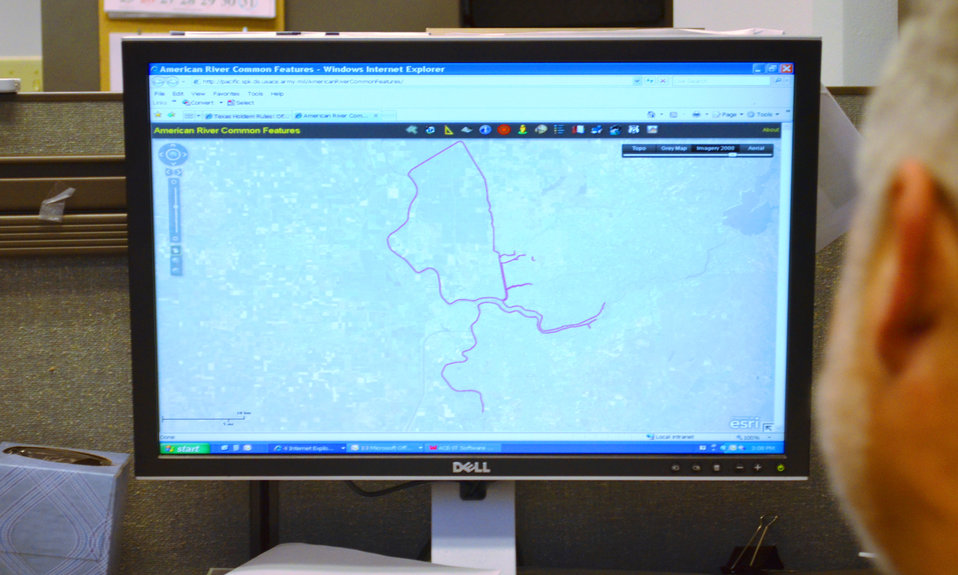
American River Common Features project outlined

Tom Sobolewski, chief of the Sacramento District geographic information systems and mapping unit, outlines on his computer the boundaries of the American River Common Features Project in Sacramento, Calif., Jan. 29, 2012. The Corps and its partners - the Central Valley Flood Protection Board and the Sacramento Area Flood Control Agency - are studying additional levee improvements to further reduce flood risk in the city and county of Sacramento.